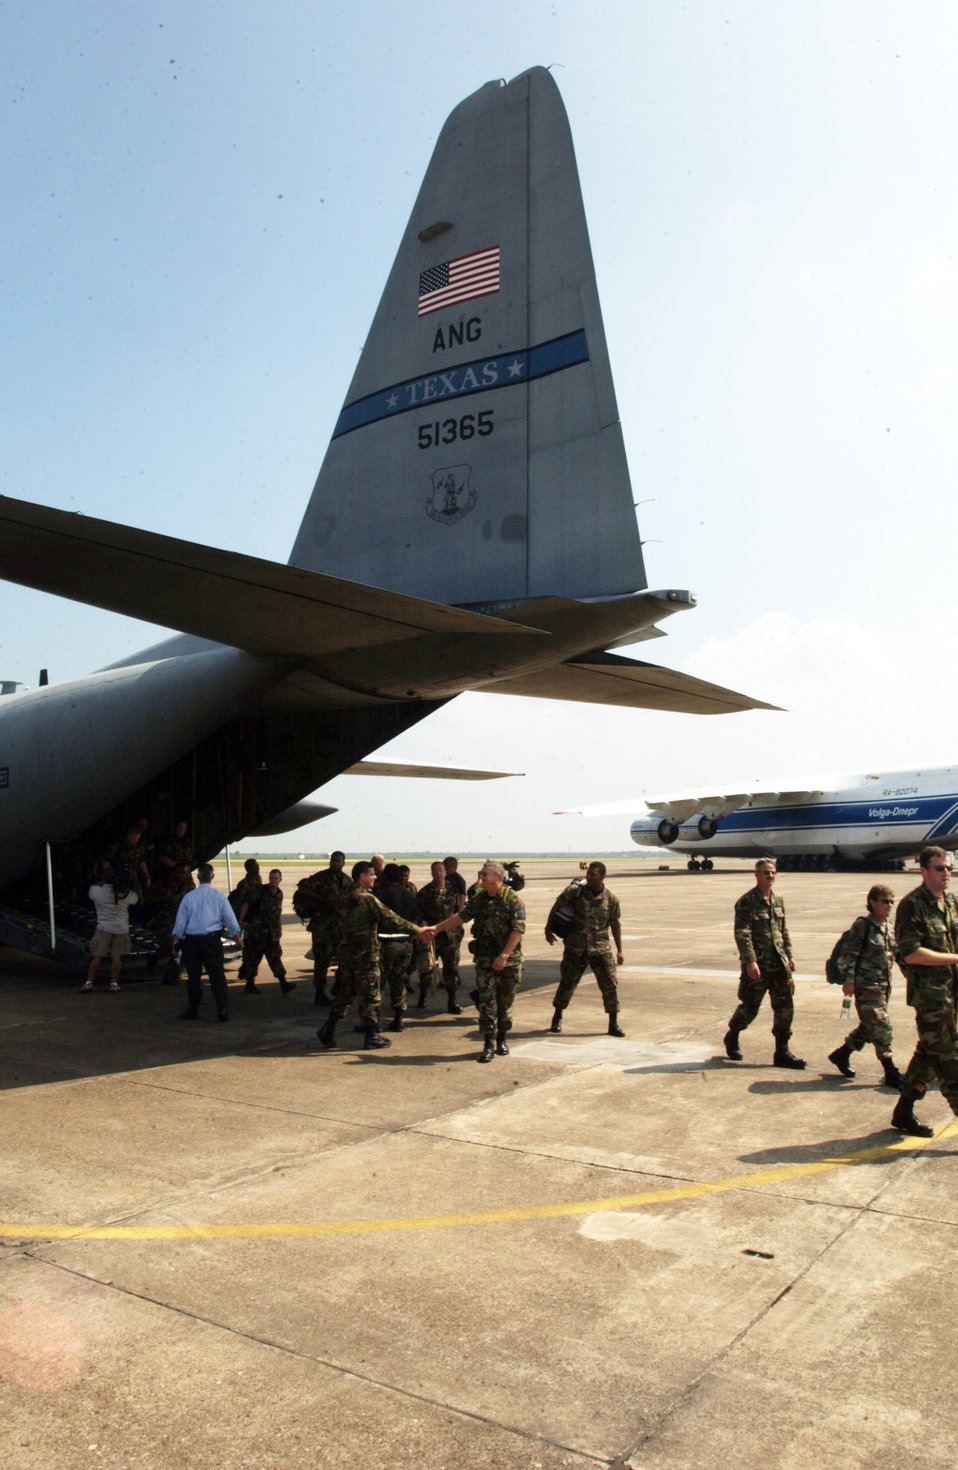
From Katrina to Rita

ELLINGTON FIELD, Texas -- After 19 days of supporting the Hurricane Katrina relief effort in New Orleans, Airmen from the 147th Fighter Wing return home Sept. 19 to prepare for Hurricane Rita. Approximately 100 Air National Guardsmen from the 147th conducted security patrols and assisted in door-to-door recovery operations while in New Orleans. If Hurricane Rita makes a damaging landfall, a base spokesman said the Airmen will stand poised to render help in the Houston area.